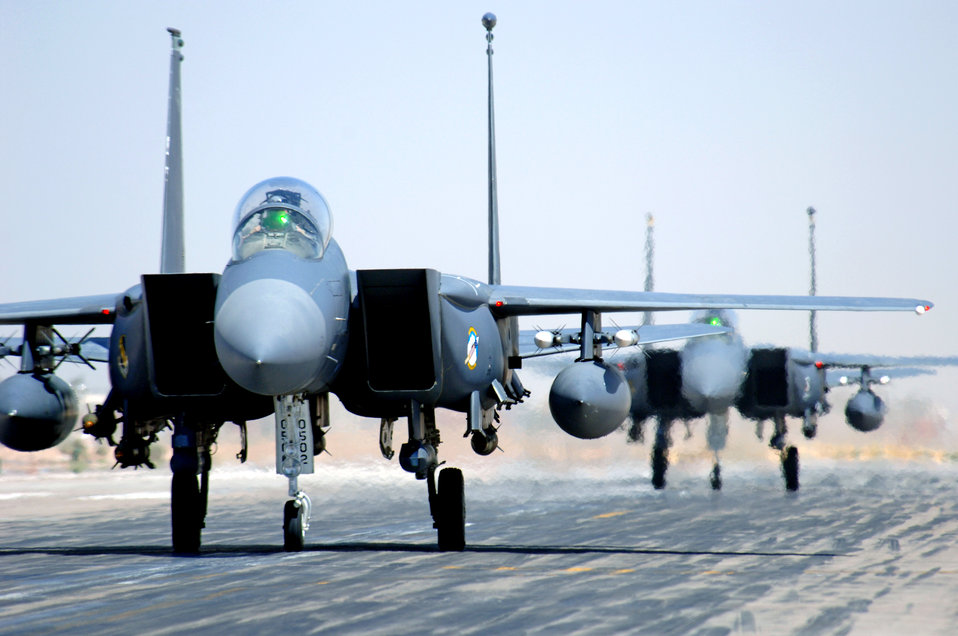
Aug. 19 airpower summary: F-15E destroys enemy position

F-15E Strike Eagles taxi in at Joint Base Balad, Iraq, after an Operation Iraqi Freedom mission. The F-15E is a dual-role fighter designed to perform air-to-air and air-to-ground missions as well as provide armed aerial overwatch. The fighters are deployed from Seymour Johnson Air Force Base, N.C.